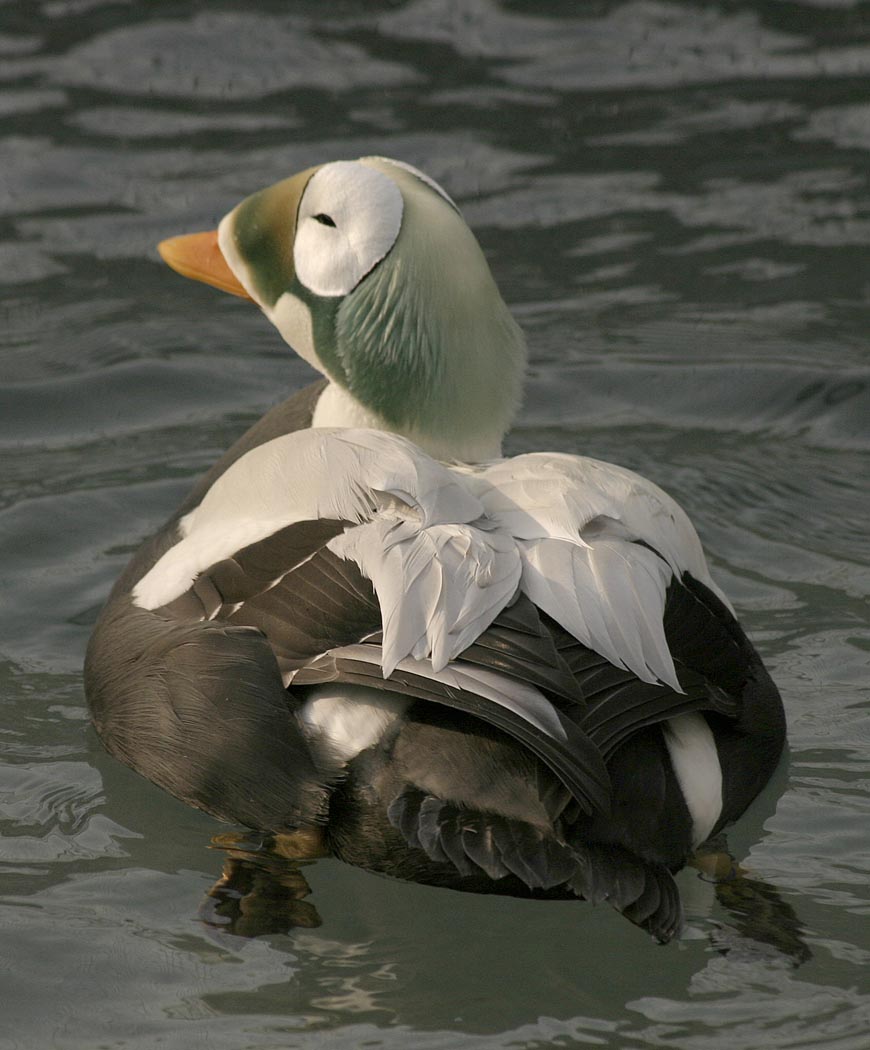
Threatened spectacled eider male (Somateria fischeri), Alaska SeaLife Center, Seward, Alaska